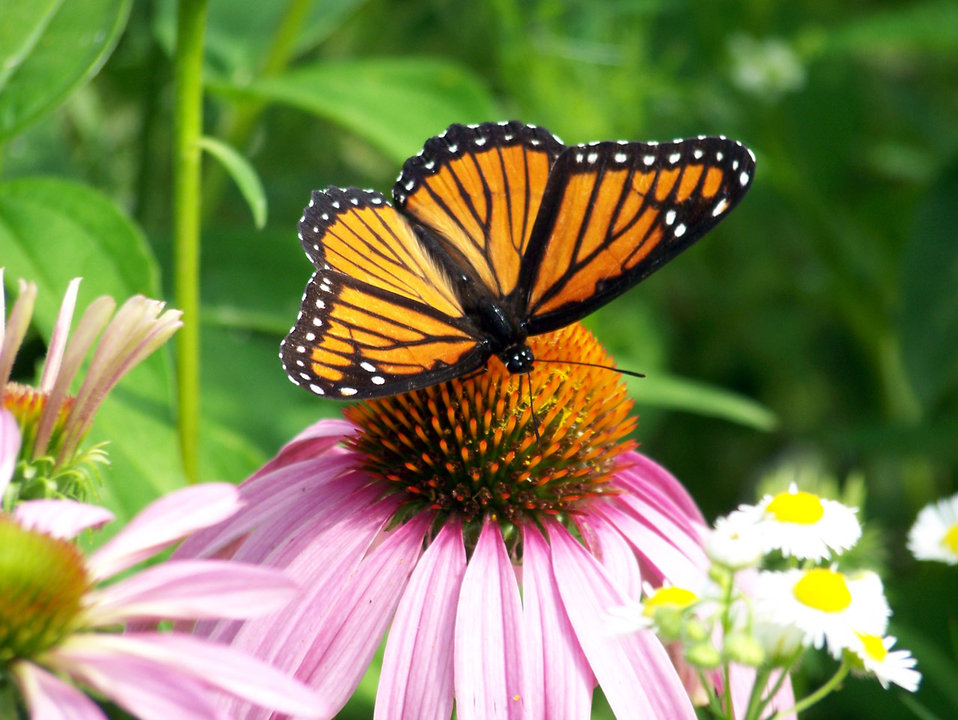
Butterfly on coneflower

Butterfly on a coneflower.